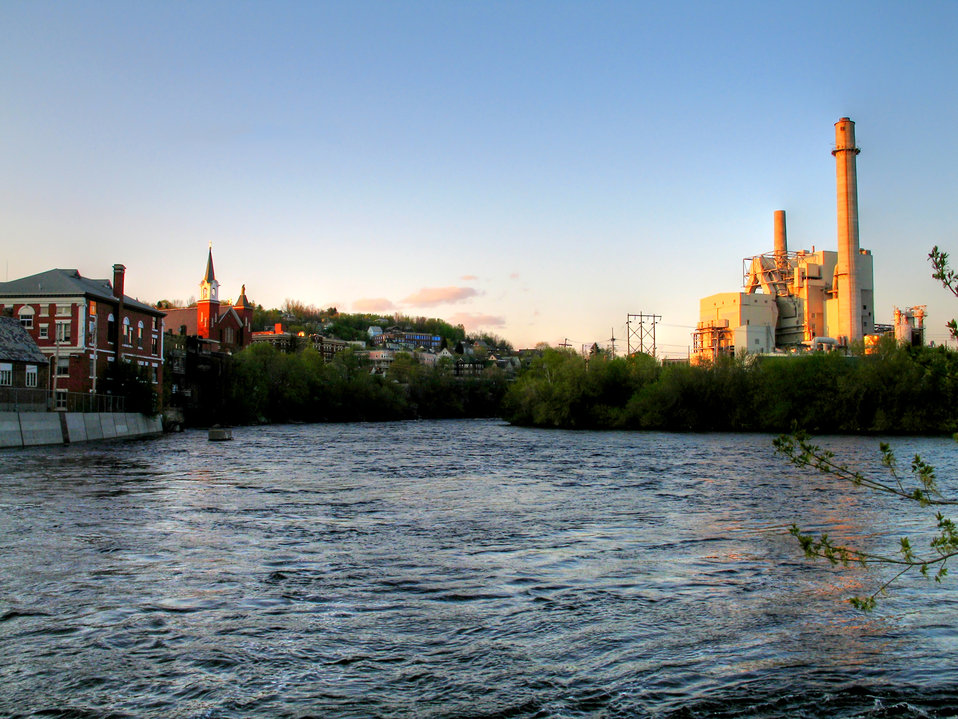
Evening Sunlight - Berlin, New Hampshire 2007